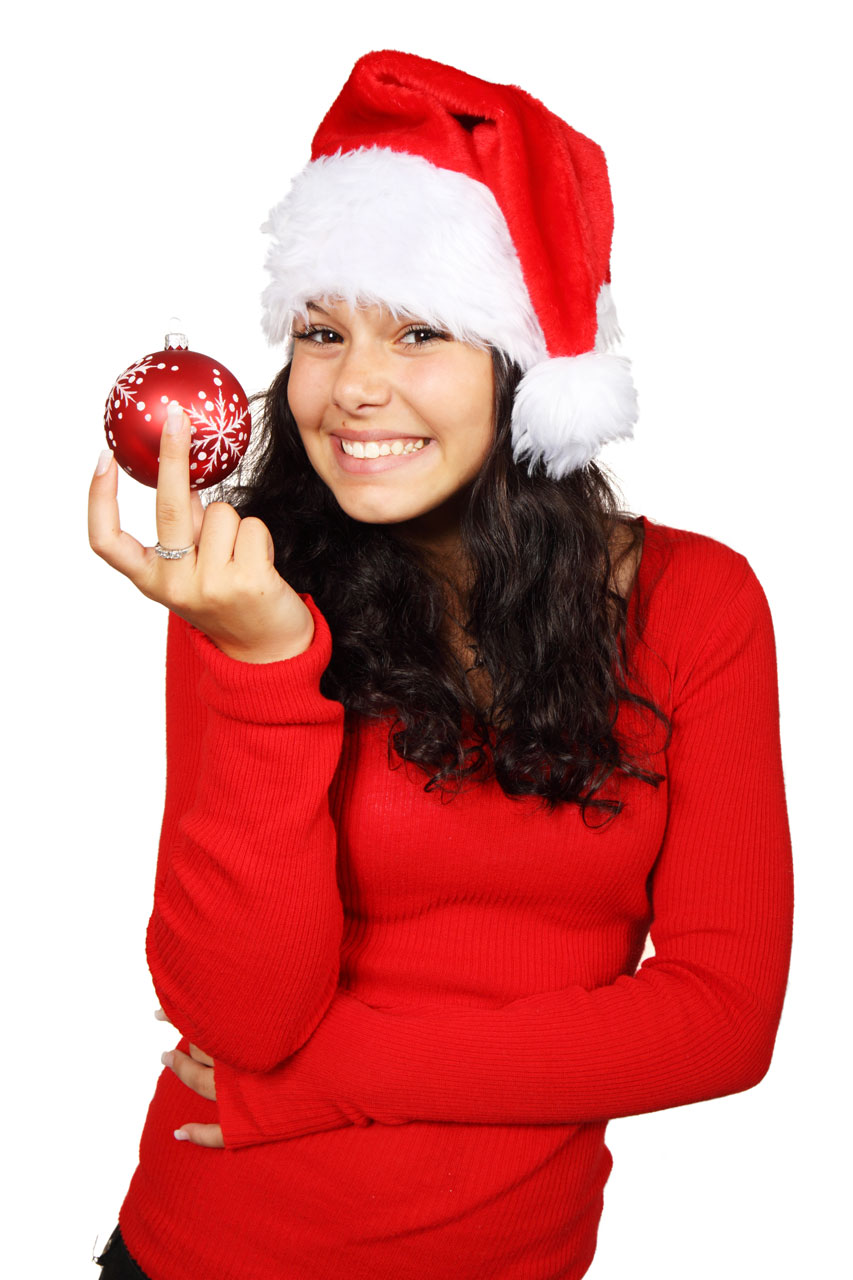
Happy santa with bauble

Smiling santa holding red christmas bauble.